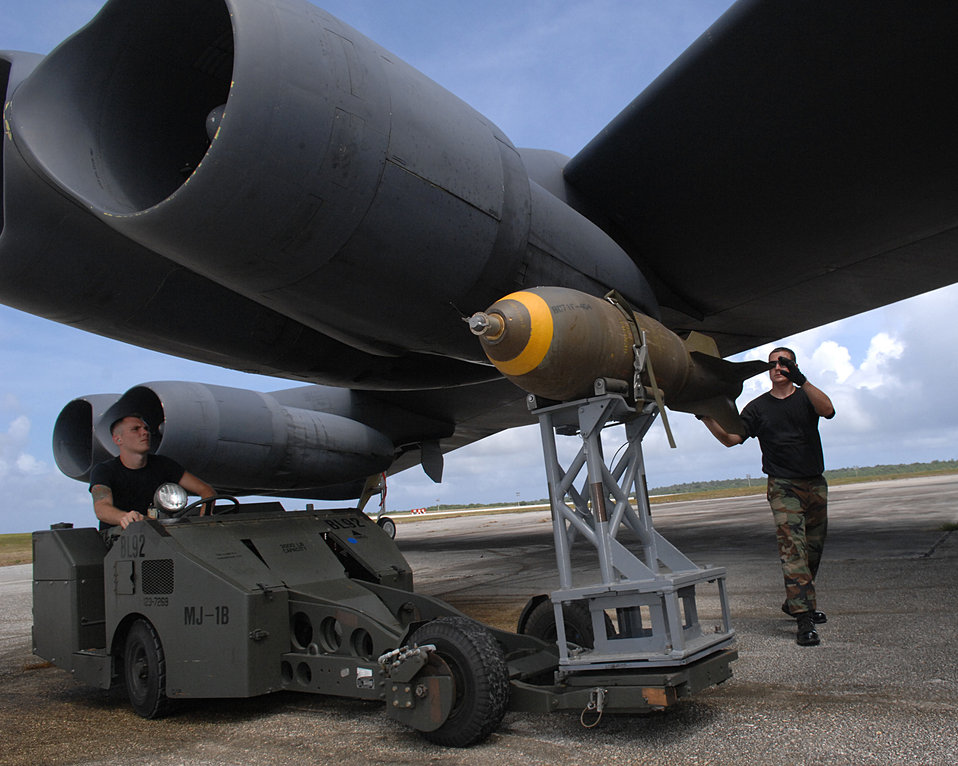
B-52 presence demonstrates global strike capabilities

Maintainers from the 2nd Bomb Wing at Barksdale Air Force Base, La., work on a B-52 Stratofortress bomber on the flightline at Andersen AFB, Guam. The bomber's presence there enhances regional security, demonstrates U.S. commitment to the Pacific region and provides integrated training opportunities for deployed Airmen.